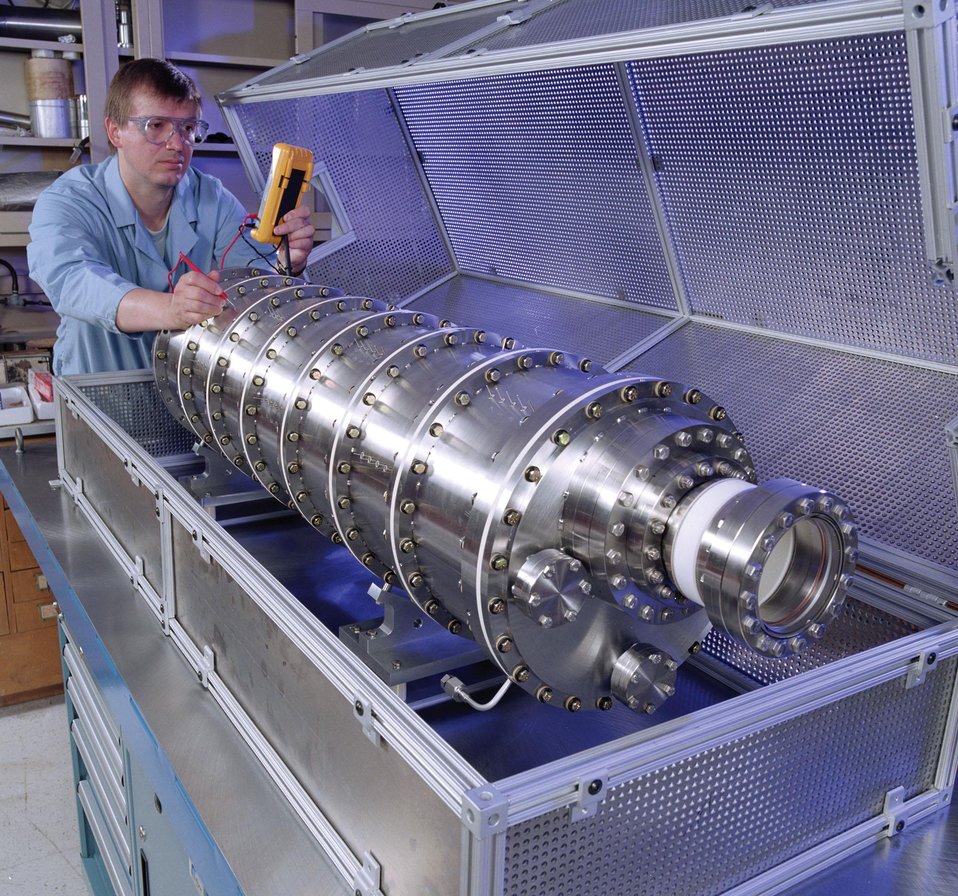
ANL PHYSICIST CHECKS A CATCHER CELL THAT WILL BE AN INTEGRAL PART OF THE RARE ISOTOPE ACCELERATOR.

THE RARE ISOTOPE ACCELERATOR (RIA), A PROPOSED FACILITY AT THE ARGONNE NATIONAL LABORATORY, WILL ENABLE PHYSICISTS TO EXPLORE THE NATURE OF NUCLEI-THE CLUSTERS OF PARTICLES THAT OCCUPY THE CENTER OF EVERY ATOM. RIA WILL PRODUCE INTENSE BEAMS OF SHORT-LIVED NUCLEI 10,000 TIMES MORE INTENSE THAN ANY NOW AVAILABLE IN ORDER TO STUDY THE ORIGIN OF ELEMENTS AND TO TEST CURRENT PHYSICS MODELS. RIA ALSO HOLDS PROMISE FOR APPLICATIONS TO MEDICINE, INDUSTRY AND OTHER APPLIED PHYSICS RESEARCH.